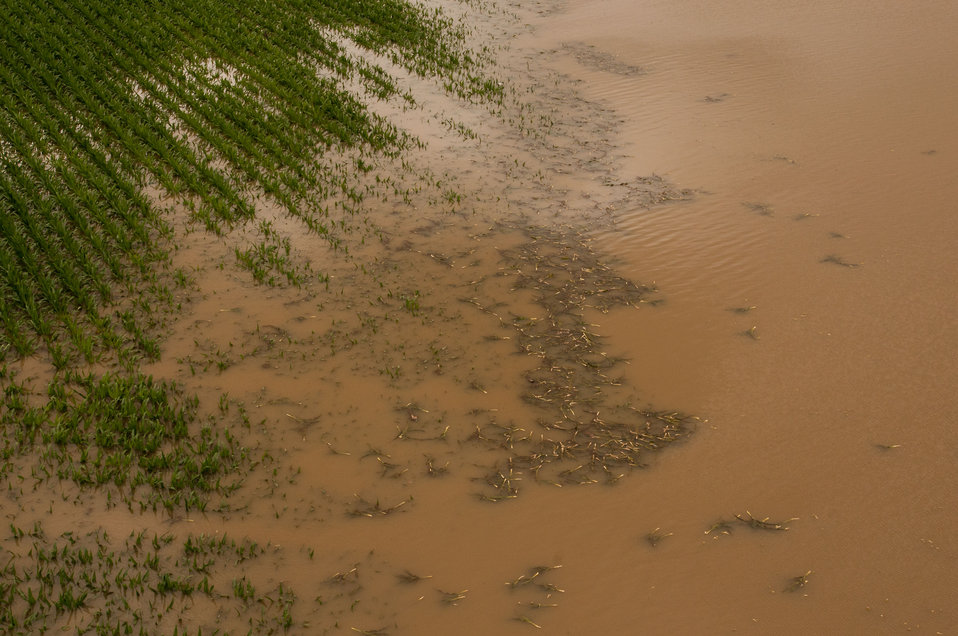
Mississippi River floodwaters have pushed into Yazoo River and into this cornfield near Yazoo City, MS, on Monday, May 16. 2011.